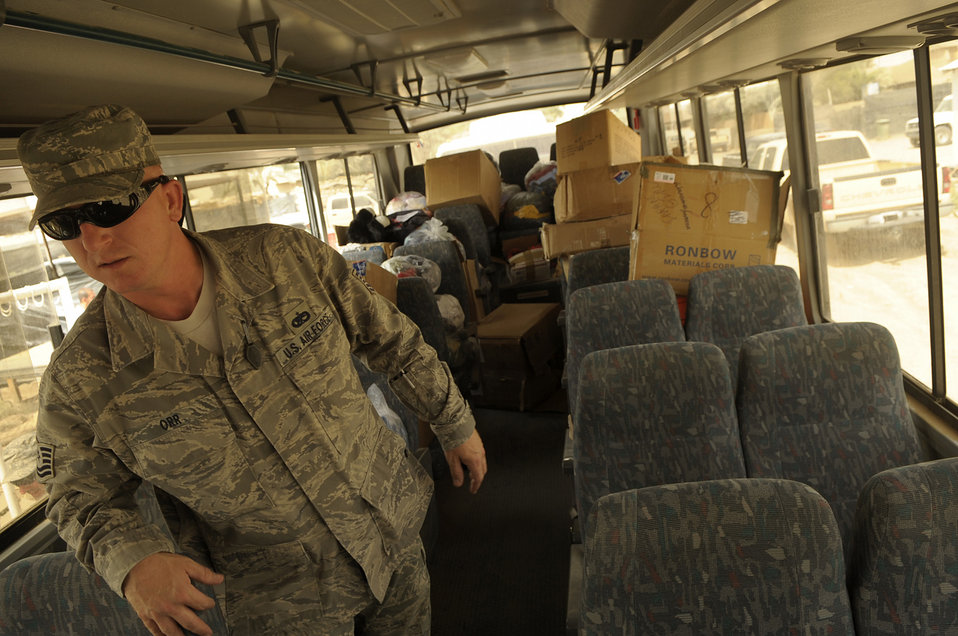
Sather Airmen foster relationships with local community

Tech. Sgt. John Orr walks down the aisle of a bus loaded with toys and other gifts for local Iraqi children donated by Airmen June 6 at Sather Air Base, Iraq. Sergeant Orr is assigned to the 447th Expeditionary Logistics Readiness Squadron.